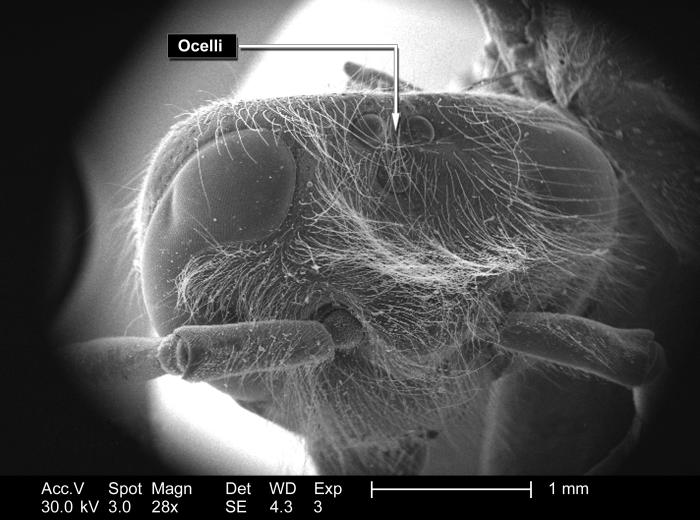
This scanning electron micrograph (SEM) depicted the head region of an unidentified hymenopteran insect found deceased on the grounds of the Decatur, Georgia suburbs. From this perspective, and at a relatively low magnification of 28x, one can see a number of sensory structures, which provide this insect with information about changes in its environment: eyes, antennae, sensorial hairs, or 'setae', and the three 'simple eyes' set in a triangular patter atop its head, the 'ocelli'.